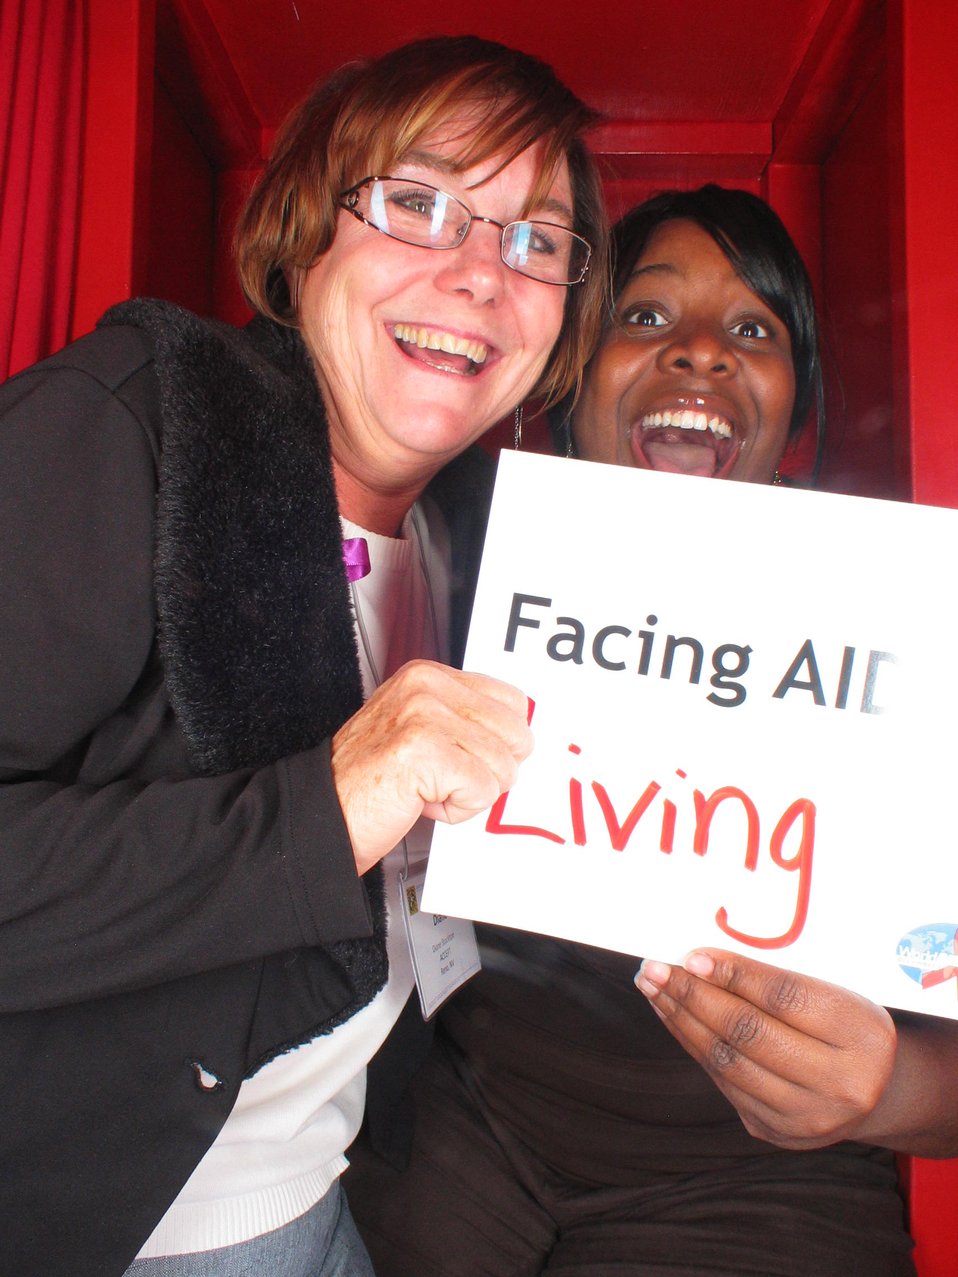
Facing AIDS Living.